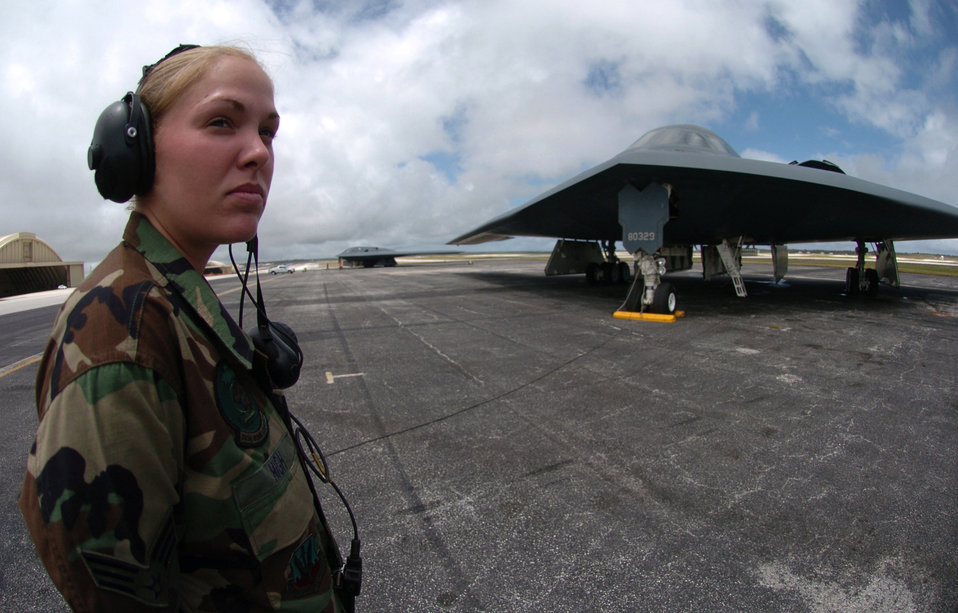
Airmen help improve B-2 aircraft maintenance in Guam

ANDERSEN AIR FORCE BASE, Guam -- Senior Airman Mindy High prepares to launch a B-2 Spirit bomber during a mission here. The B-2s deployed here Feb. 25 to provide U.S. Pacific Command officials a continuous bomber presence in the Asia-Pacific region, enhancing regional security and the U.S. commitment to the Western Pacific. Bomber aircraft have had an ongoing presence on the island since February 2004. Airman High is a crew chief from the 509th Bomb Wing at Whiteman Air Force Base, Mo.